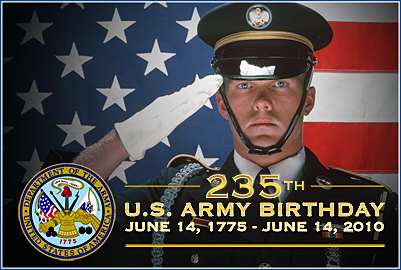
Army Birthday